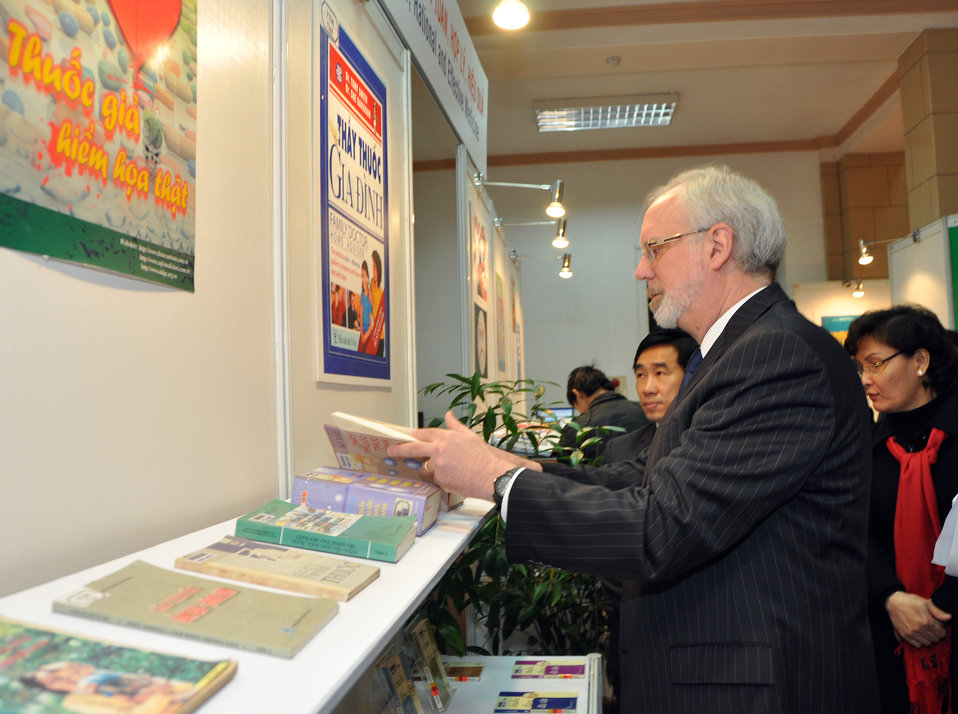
U.S. Ambassador David Shear opens safe medicine exhibition in Hanoi

Safe Medicine Exhibition